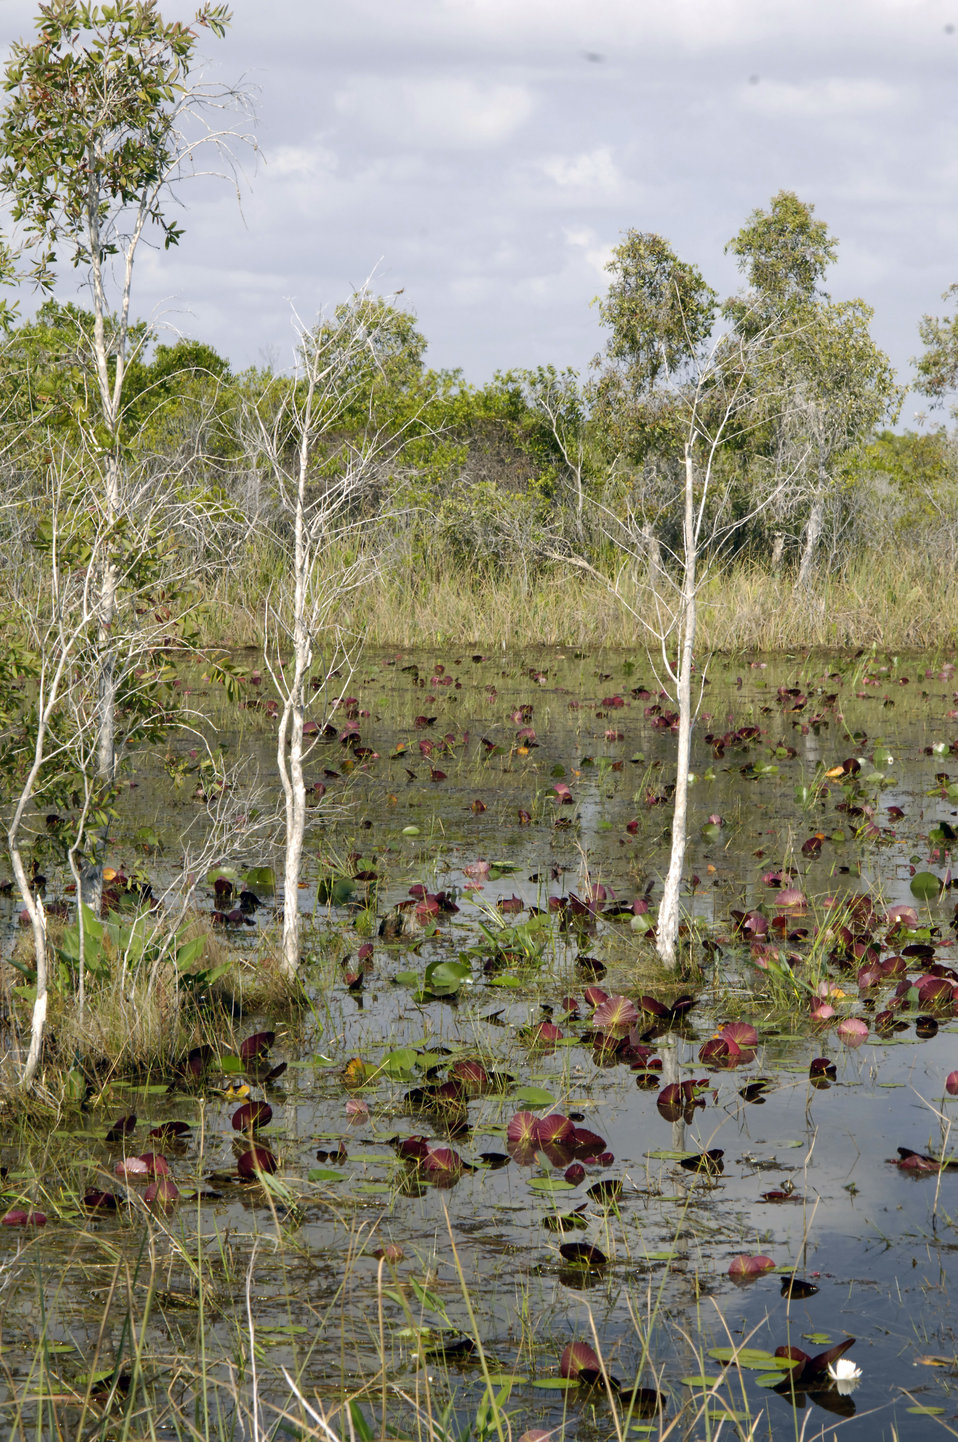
The U.S. Departments of Agriculture’s (USDA) Forest Service (FS) and U.S. Department of Interior’s (DI) National Park Service (NPS) work to preserve and restore the Everglades National Park on April 7, 2010. Water in south Florida once flowed freely from the Kissimmee River to Lake Okeechobee and southward over low-lying lands to the estuaries of Biscayne Bay, the Ten Thousand Islands, and Florida Bay. This intricate system evolved into a finely balanced ecosystem that formed the biological infrastructure for the southern half of the state. However, due to man’s interference the draining process to transform wetland to land ready to be developed severely damaged the ecosystem and the species it supported. The Everglades National Park was established in 1947 by early conservationists, scientists, and other advocates to conserve the natural landscape and prevent further degradation of its land, plants, and animals.